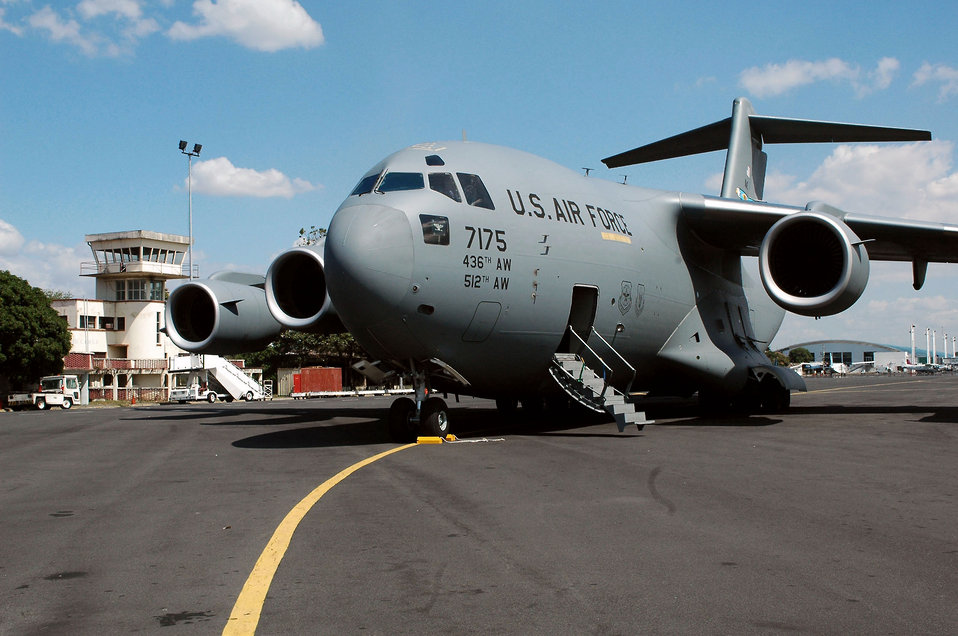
Dover aircrew delivers humanitarian supplies to Nicaragua

A C-17 Globemaster III from Dover Air Force Base, Del., sits on the Managua International Airport Jan. 18 in Nicarauga. Airmen of the Air Force Reserve's 326th Airlift Squadron delivered approximately 18,000 pounds of humanitarian cargo consisting of desks, chairs, file cabinets and books for use at a Nicaraugan university library.